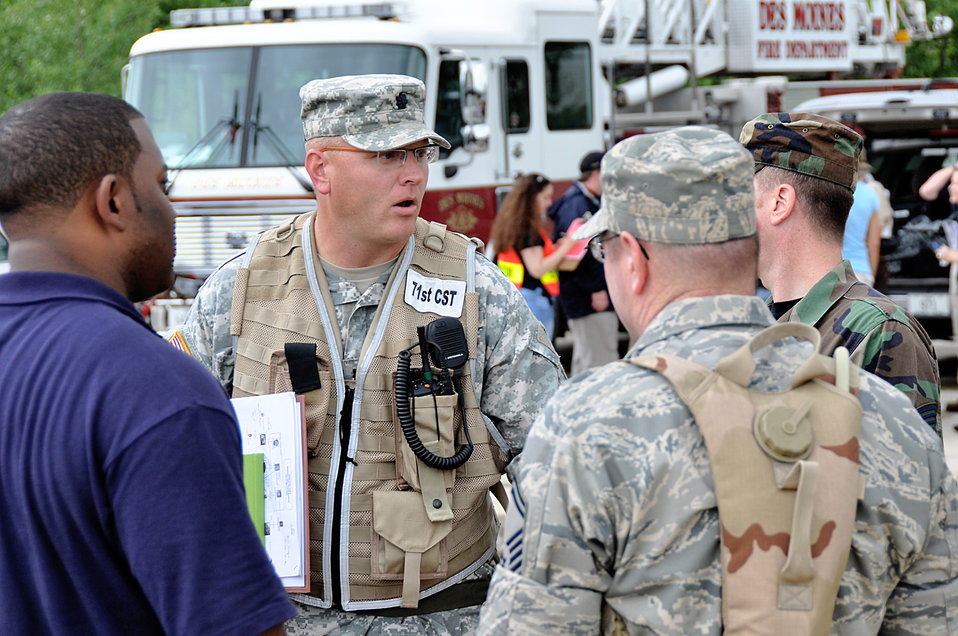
National Guard kicks off Vigilant Guard in Iowa

Army Lt. Col. Tim Glen speaks with guardsmen and state and local participants in Vigilant Guard Iowa June 18 in Des Moines, Iowa. The National Guard Bureau sponsored exercise is designed to test local, state, federal and military responders to perform roles and responsibilities related to homeland defense in support of the governor and the Iowa Emergency Management Agency, in the event of a catastrophic emergency within the state. This portion of the exercise was in response to a simulated, domestic terrorist attack using a train derailment to release chemical agents. Colonel Glen is the 71st Civil Support Team, Iowa National Guard commander.